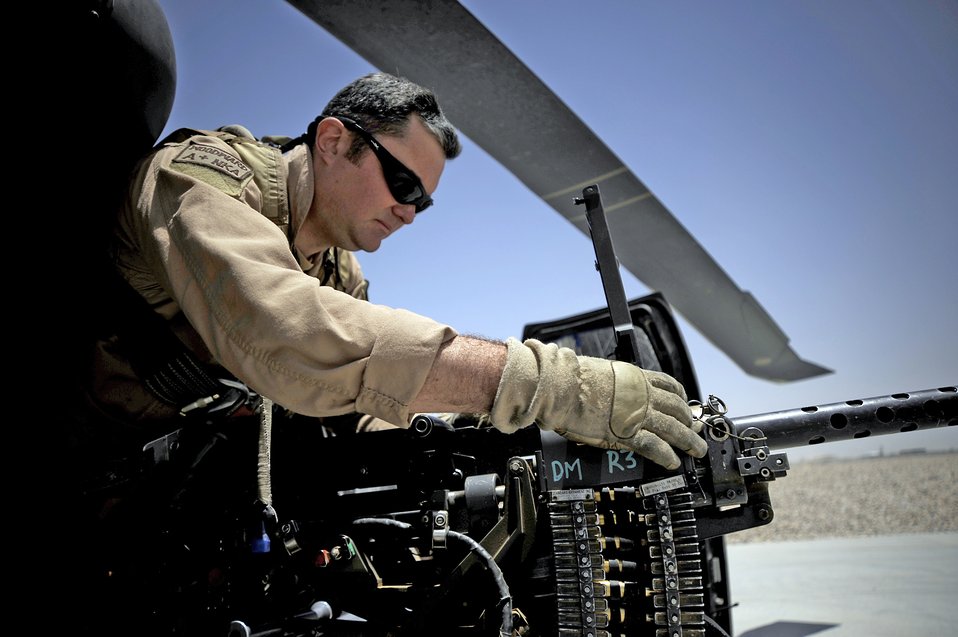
A little to the right...

Tech. Sgt. Brock Woodward performs a preflight inspection of a .50-caliber machine gun at Camp Bastion, Afghanistan. Sergeant Woodward is a flight engineer with the 129th Expeditionary Rescue Squadron.